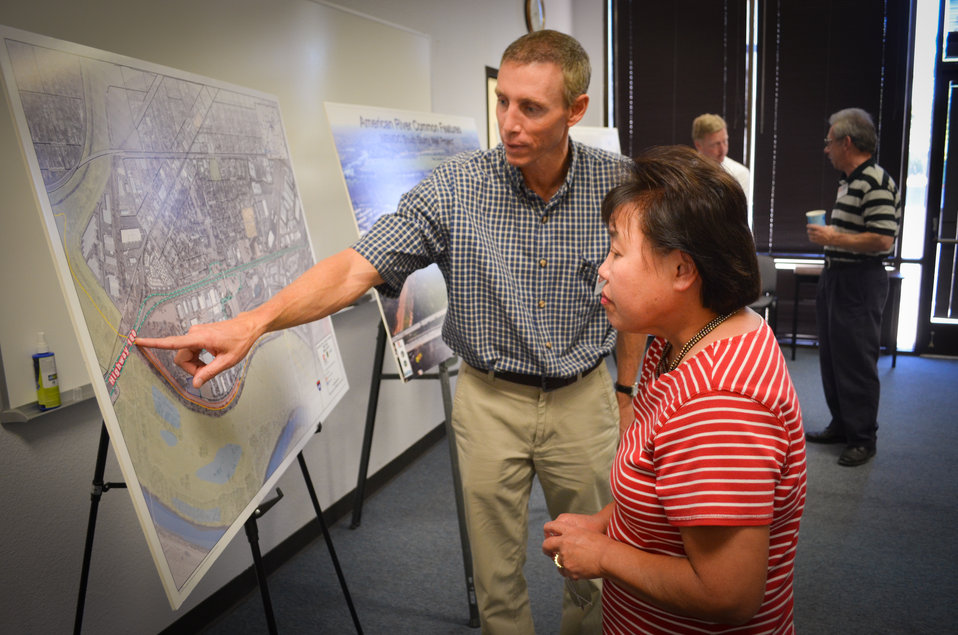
Levee work topic of public meeting in north Sacramento

Mark Boedtker (left), an engineering technical lead for the U.S. Army Corps of Engineers Sacramento District, spoke with nearby resident Vicki Kawamura about upcoming levee work along the American River, during a public meeting in north Sacramento, Calif., June 18, 2013. The district held the meeting to explain the project's purpose and possible impacts to the local residents, schools and businesses.